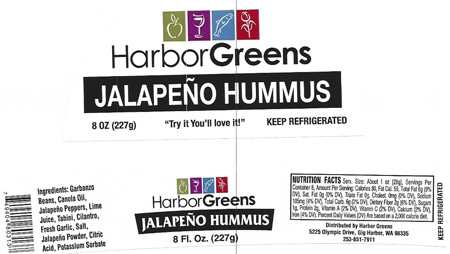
RECALLED – Hummus

July 16, 2013 – Product Recall – Hagee Foods Inc. dba Penny's Salsa Inc. Recalls Hummus Products Because of Possible Health Risk.